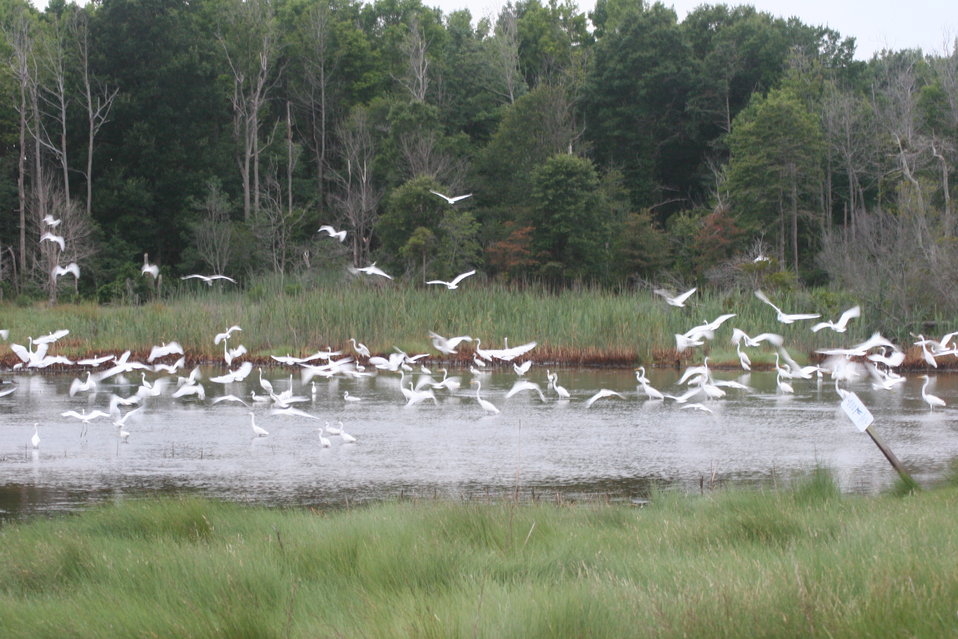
Flock of Egrets in the Marsh